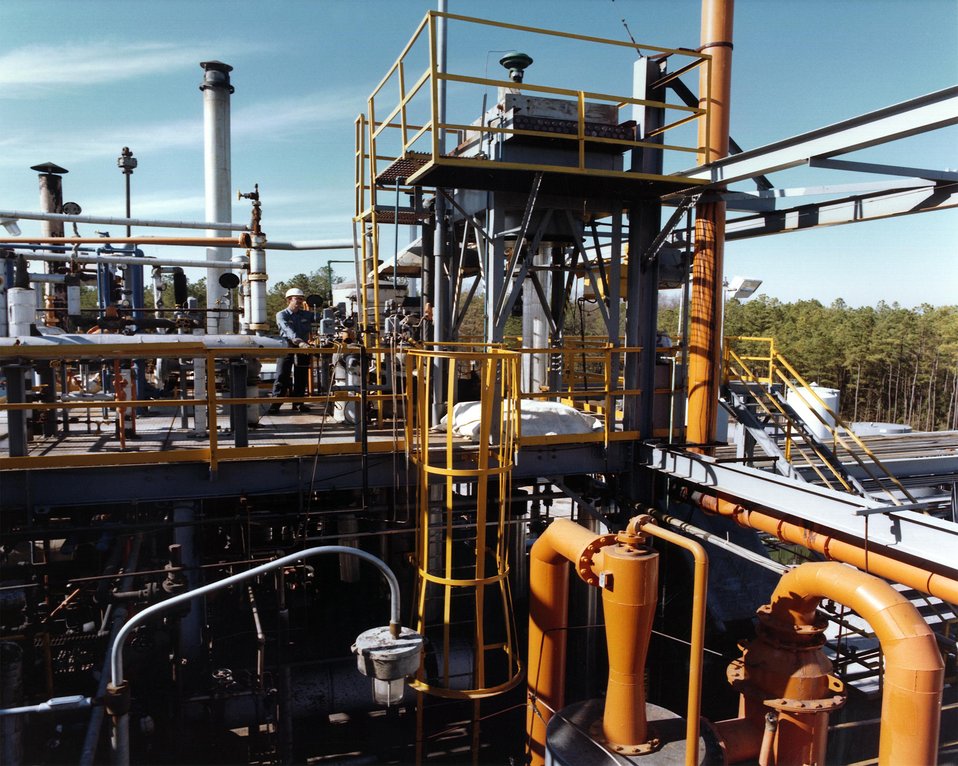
THE ADVANCED COAL LIQUEFACTION R&D FACILITY.